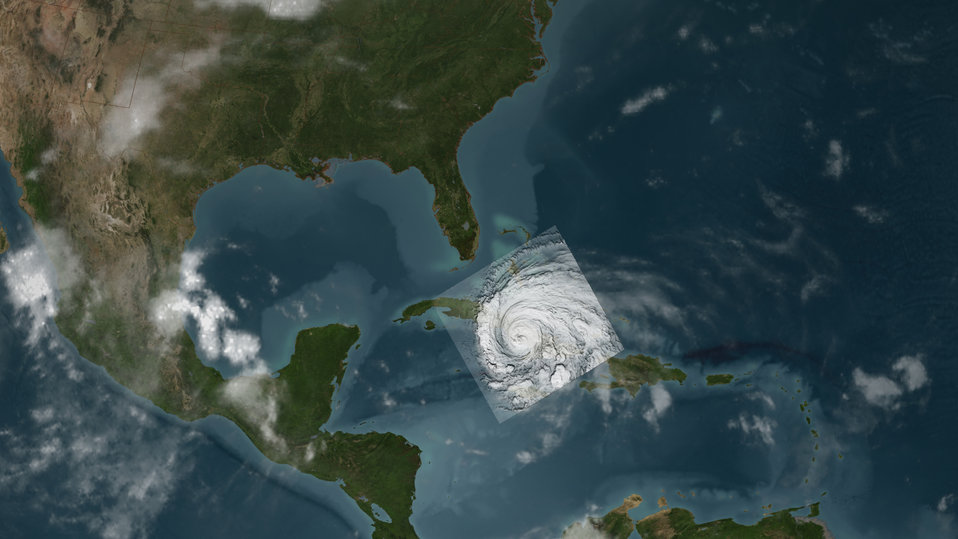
Hurricane Ike Slams Cuba at 7:04 EDT September 8, 2008